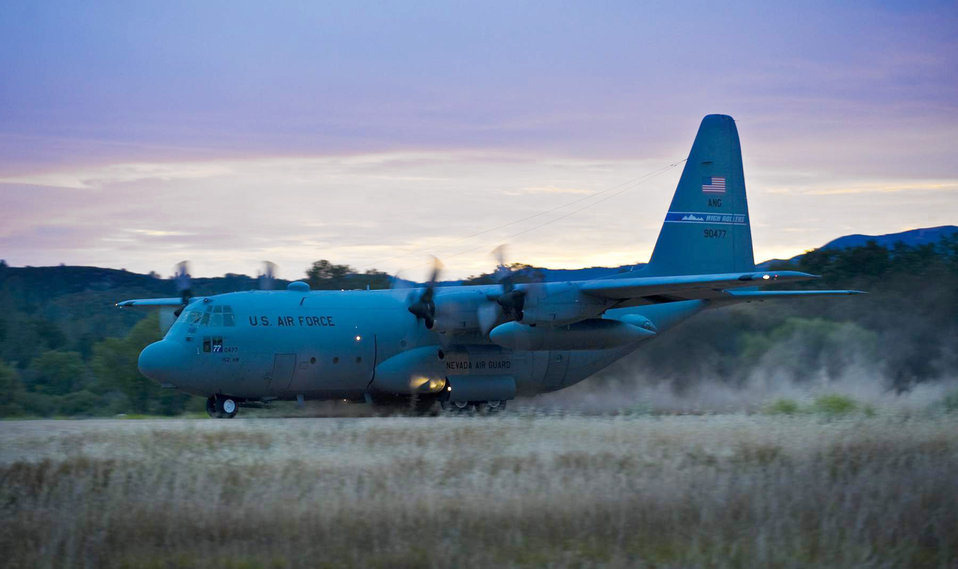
Hydra Exercise 2009

A C-130 Hercules takes off on a dirt landing strip on Schoonover Landing Zone at Fort Hunter-Ligget, Calif. during the Hydra Exercise 2009. Hydra is a training exercise developed to provide a West Coast venue to train the 615 Contingency Response Wing's unique mission capabilities such as, command and control, aerial port, maintenance and air mobility liaison duties in a joint environment.